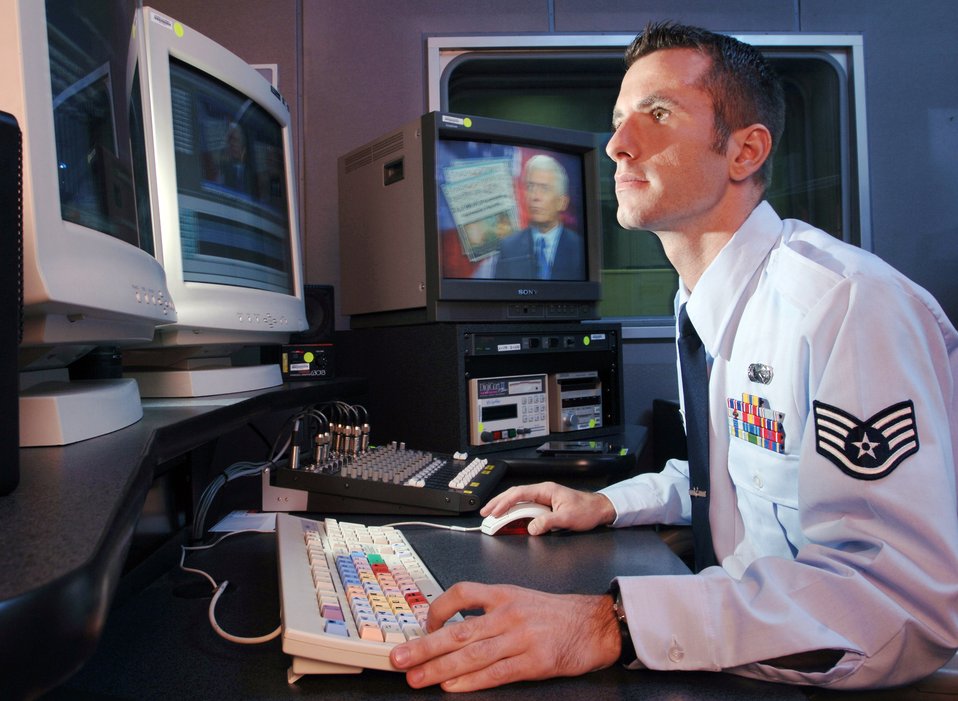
Live from Japan

YOKOTA AIR BASE, Japan -- Staff Sgt. Lee Hoover uses an avid video editing system to produce the nightly Pacific Report newscast here. Air Force News Agency's Detachment 10 provides 24-hour radio and TV services to an audience of more than 300,000 U.S. servicemembers, civilian employees and family members across Japan.